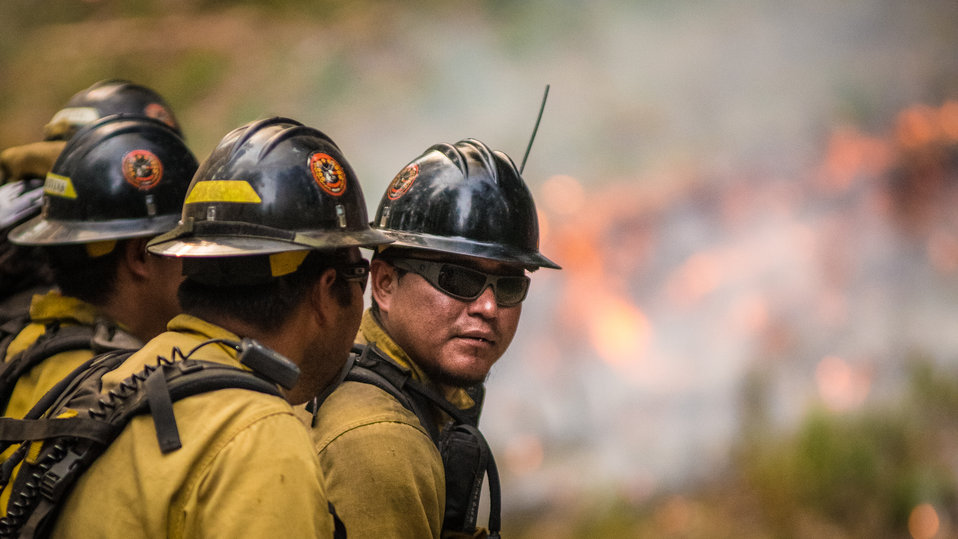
Geronimo Interagency Hotshot Crew, Department of the Interior (DOI) Indian Affairs (IA) Bureau of Indian Affairs (BIA) San Carlos Agency in Arizona; on assignment at the Big Windy Complex Wildlands Fire, approximately 15 miles west of Interstate-5 and East Northeast of Galice, Oregon, conducts a prescribed burn 'burnout' operation to help stop the main fire that may head toward this roadway, on Friday, Aug 9, 2013. The primary mission of the Interagency Hotshot Crews (IHC) is to provide a safe, organized, mobile and highly skilled hand crew for all phases of wildland fire suppression. The arduous duties and specialized assignments required of IHC personnel require uniform staffing, certification, training, equipment, communications, transportation, organization, and qualifications that adhere to interagency standards and guidelines.